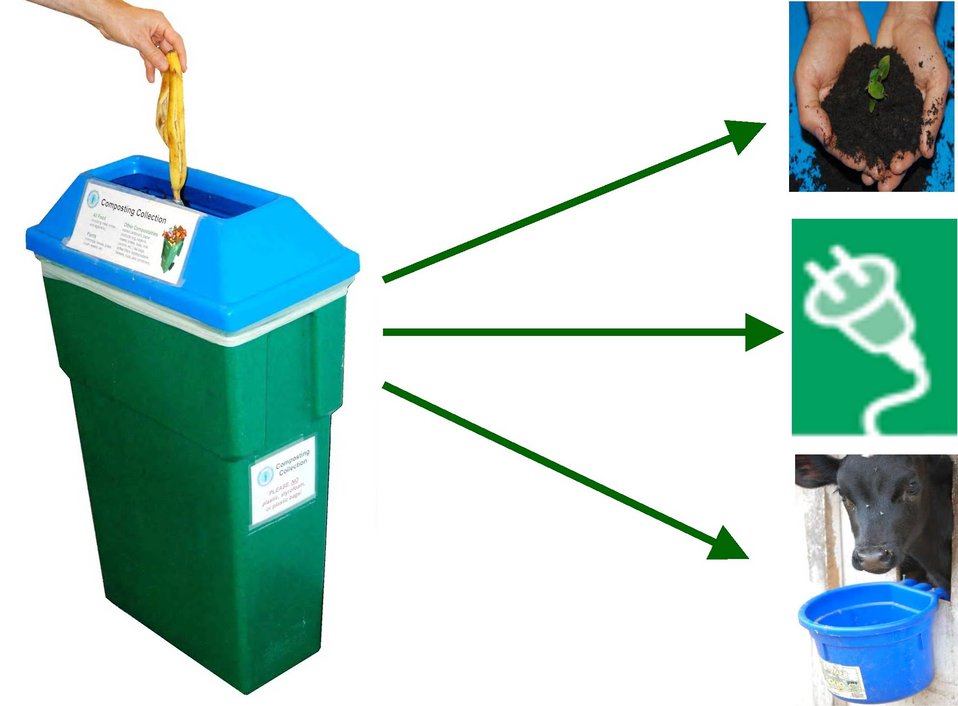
How To Reduce Your Food Waste

There are many ways to reduce the amount of food waste that is sent to the landfills. Here are a few:
- Eat Your Leftovers! Reduce the amount of food waste you generate.
- Start a backyard compost bin
- If your city offers food waste collection, make sure to put your food in the proper bin.